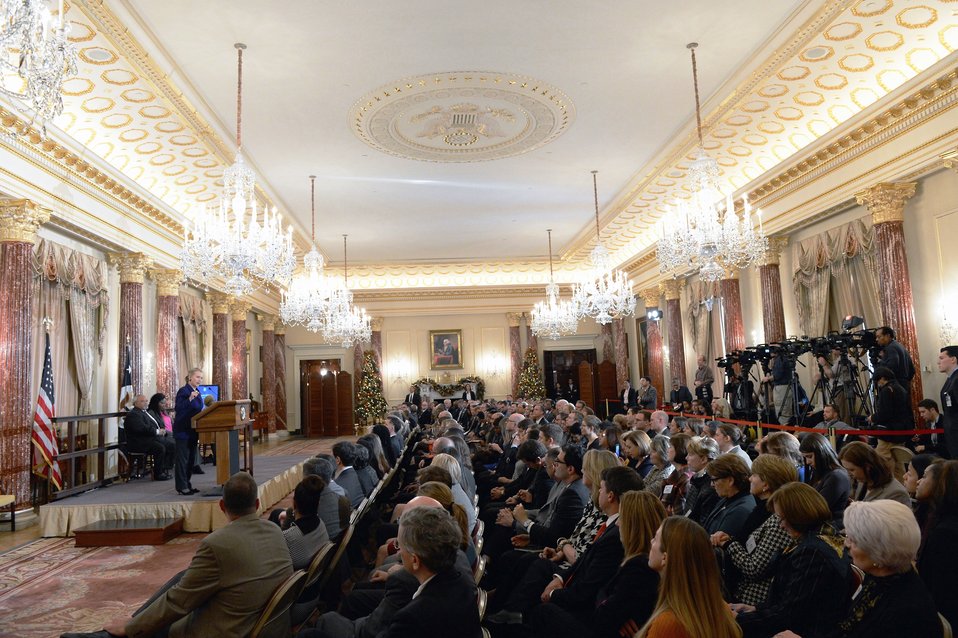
Secretary Clinton Delivers Remarks in Recognition of World AIDS Day

U.S. Secretary of State Hillary Rodham Clinton delivers remarks in recognition of World AIDS Day at the U.S. Department of State in Washington, D.C., November 29, 2012.